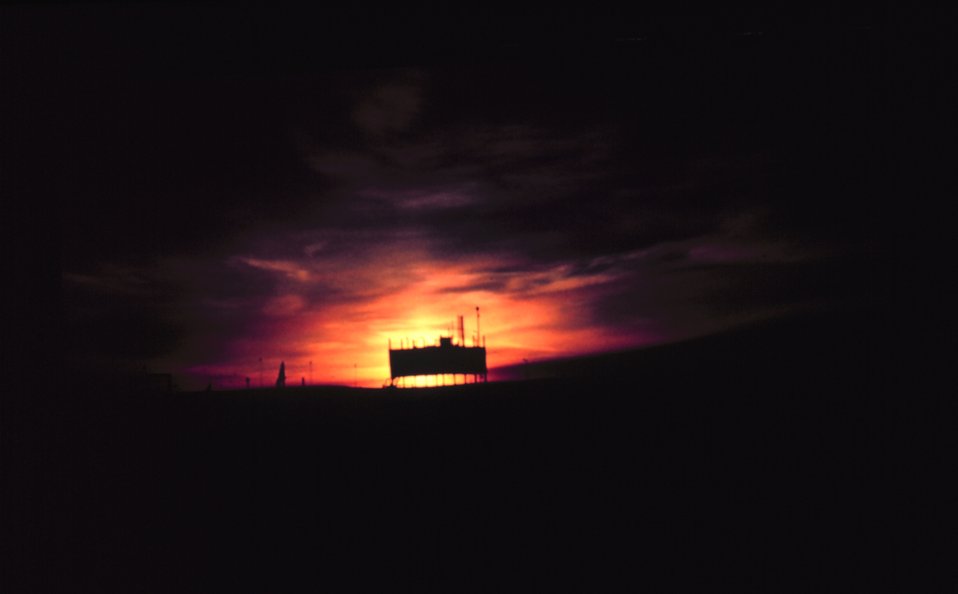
Not much twilight left